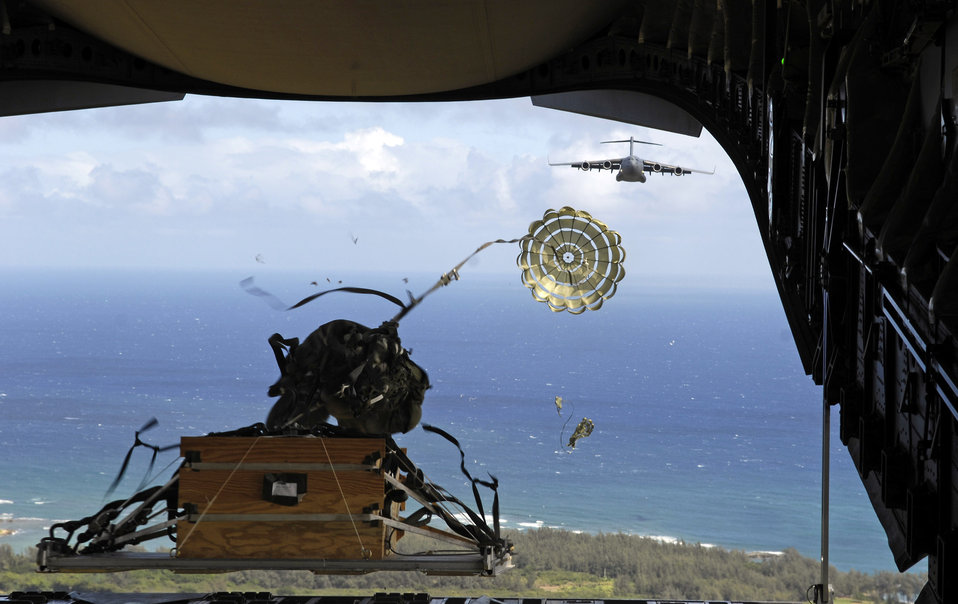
Out she goes

A practice pallet is released from the back of a C-17 Globemaster III Aug. 13 during an airdrop training mission. C-17s from the 535th Airlift Squadron at Hickam Air Force Base, Hawaii, were taking part in a 4-ship multi-element airdrop training mission to maintain currency and proficiency.